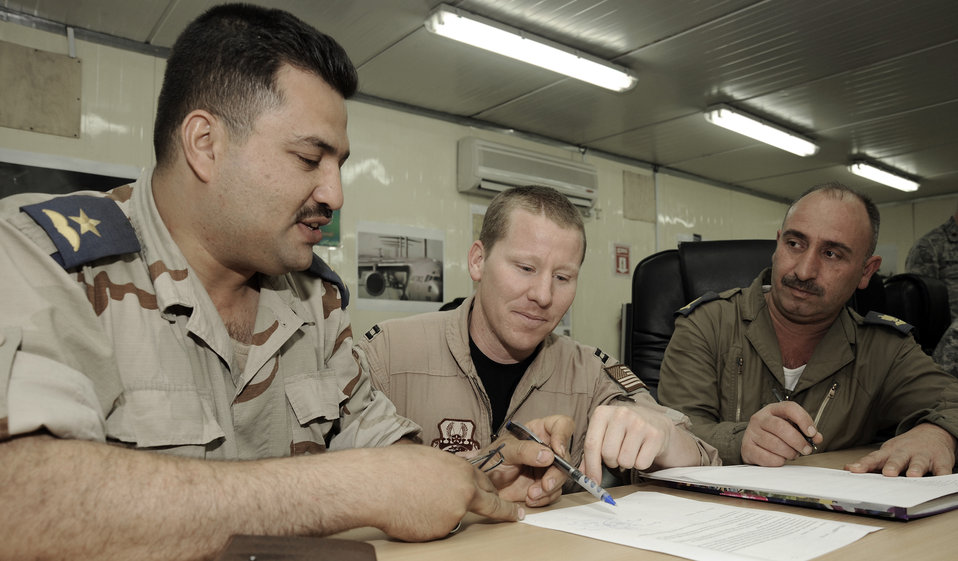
Airmen build Iraqi air operations center capability

Capt. Justin Allen plans out air operations with Iraqi air force 2nd Lt. Firas and Maj. Muaamur Fuad April 21 at Camp Victory, Iraq. Major Fuad and Lieutenant Firas are part of 10 Iraqi air force officers receiving the first course of U.S. Joint Air Operations Planning. Captain Allen is deployed from Tyndall Air Force Base, Fla. and a native of Pryor, Okla.